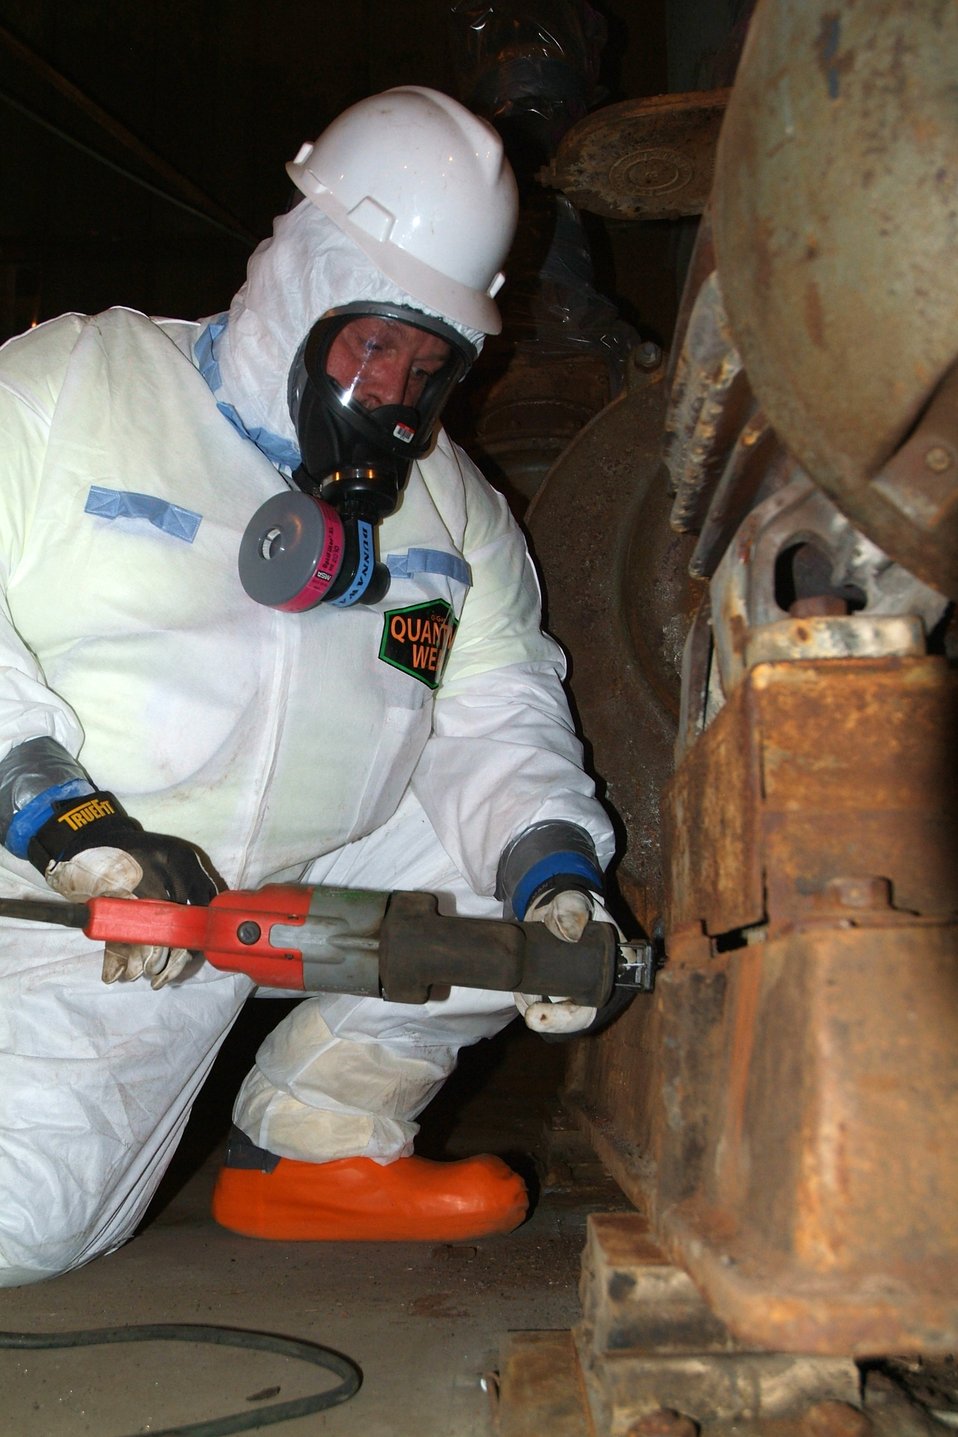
Recovery Workers Save Money, Time in Paducah Site Demolitions

A Recovery Act worker saws a bolt loose so that a motor can be removed from the Feed Plant, which operated from 1957 to 1977. Uranium hexafluoride and fluorine were manufactured there.